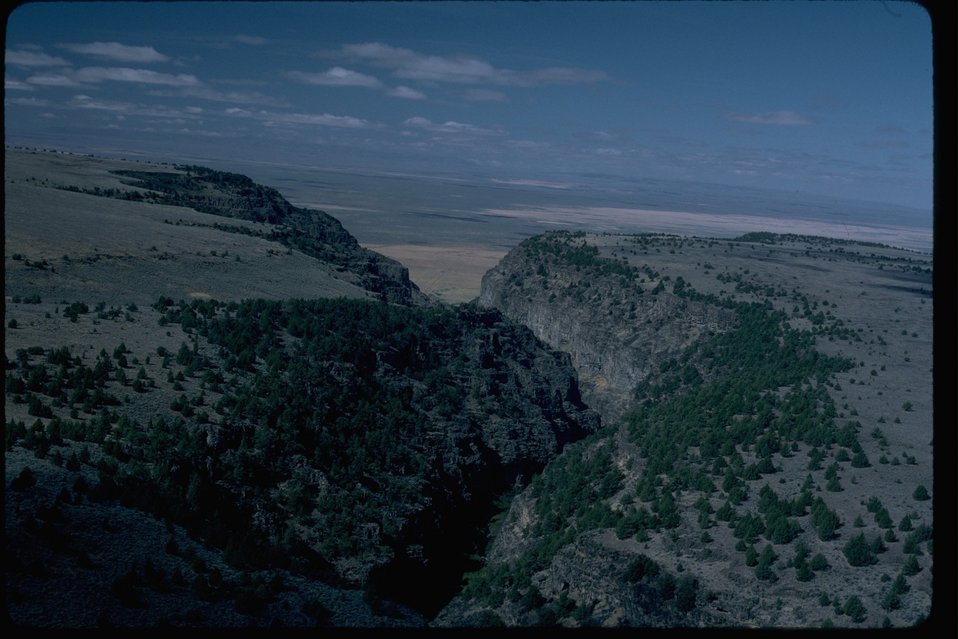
Home Creek Drainage aerial taken from uplands towards the lowlands. OR 2-85H